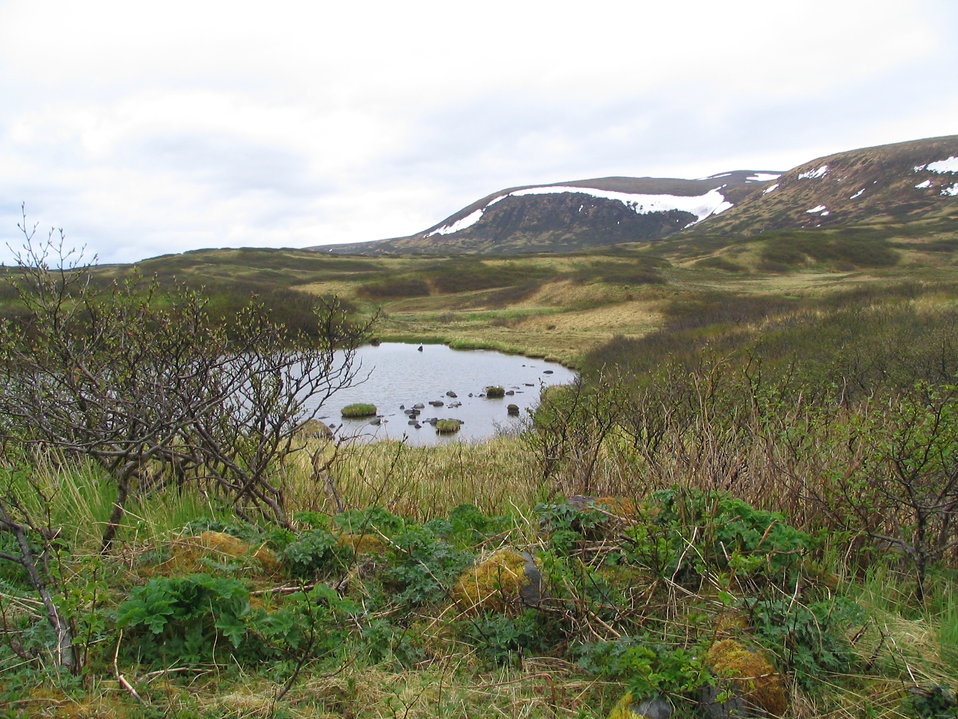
Izembek Landscape

In wilderness near Frosty Peak, Izembek National Wildlife Refuge